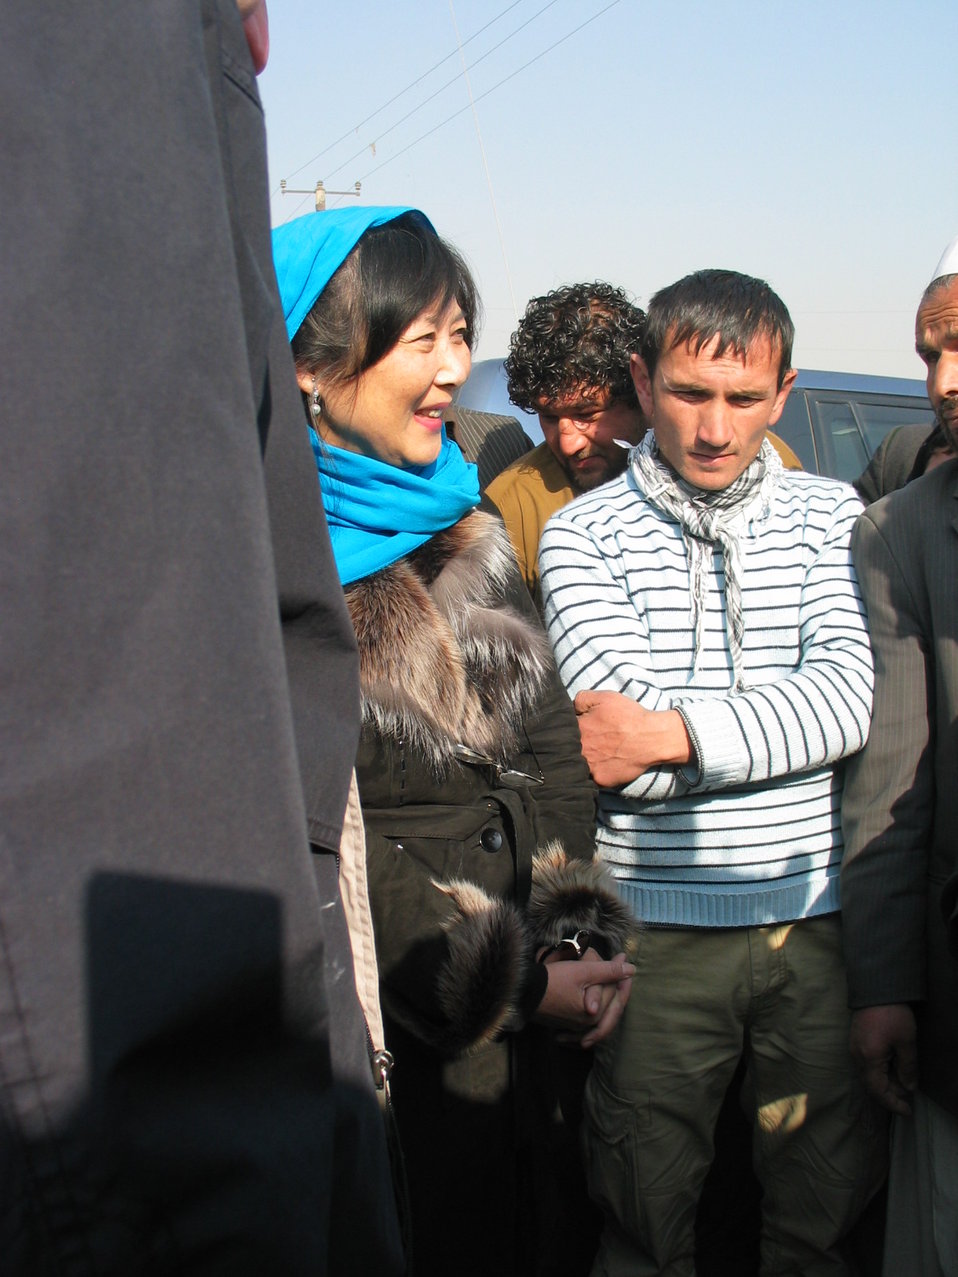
Kabul River Bridge Renovation, December 3, 2010